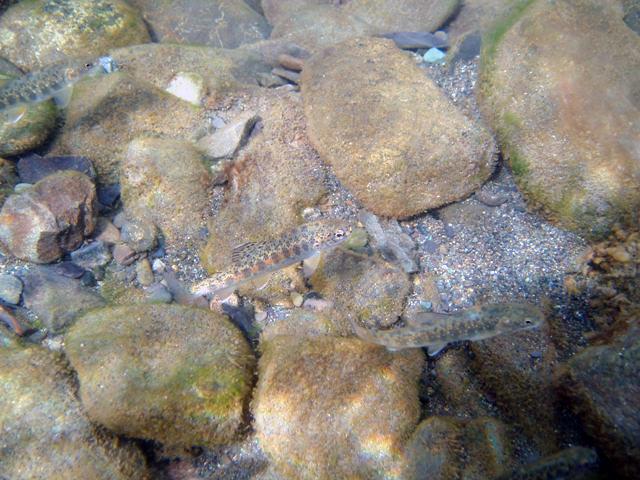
Juvenile rainbow trout and Dolly Varden